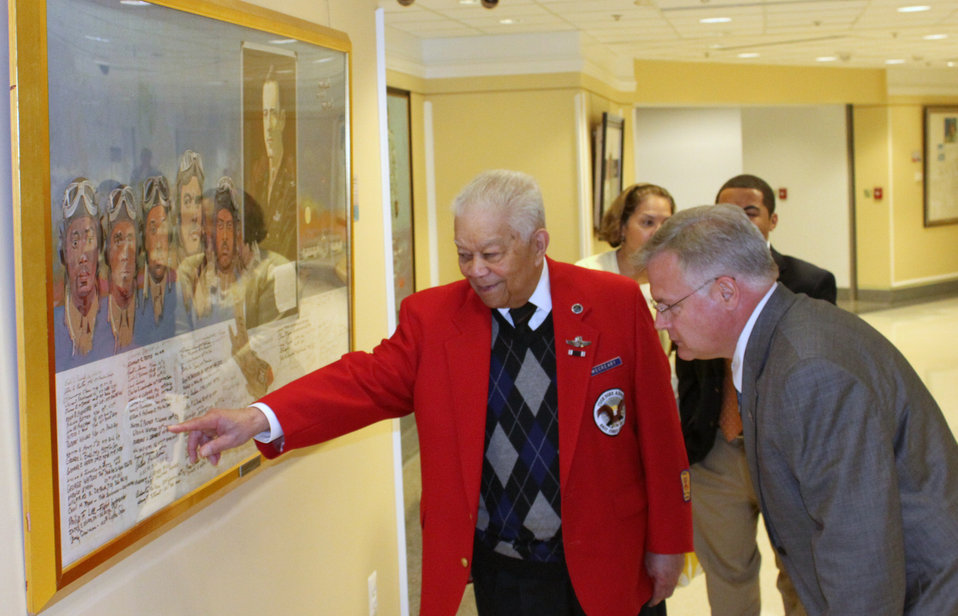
‘Red Tail’ member visits the Pentagon

Retired Lt. Col. Walter McCreary points out the name of a fellow Tuskegee Airman to Russell Kirk, the director of the Air Force Art Gallery, during a visit to the Pentagon on March 16, 2012. McCreary, a member of the Tuskegee Airmen, conducted 89 combat missions during World War II.